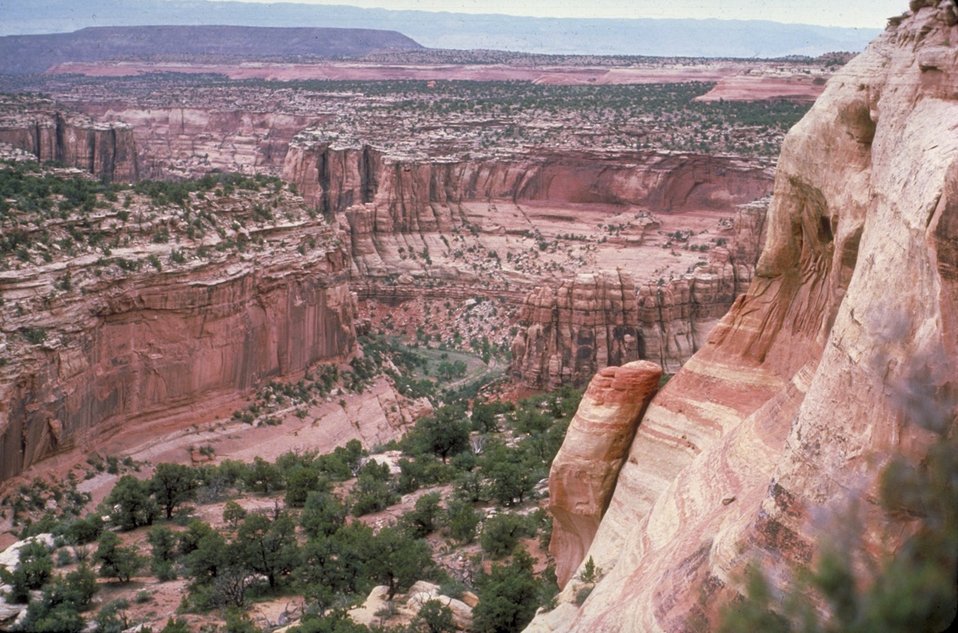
Mee Canyon in the Colorado Canyons National Conservation Area.